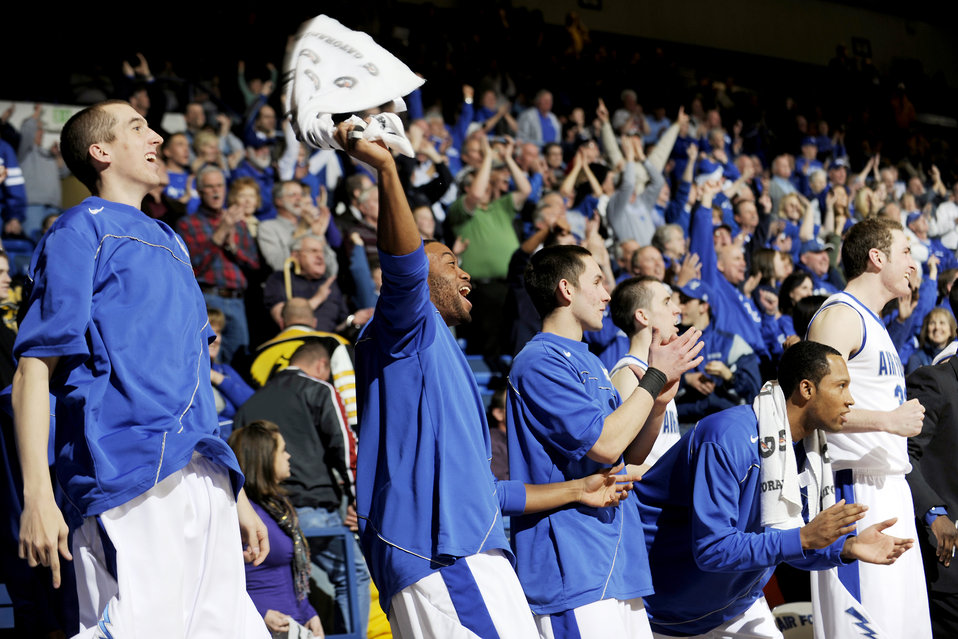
Falcons break conference streak

U.S. Air Force Academy Falcon players celebrate along with fans during the last seconds of the game against the Wyoming Cowboys at the Academy's Clune Arena in Colorado Jan. 30, 2010. The Falcons won 70-63. This win broke a 22-game conference losing streak for the Falcons.